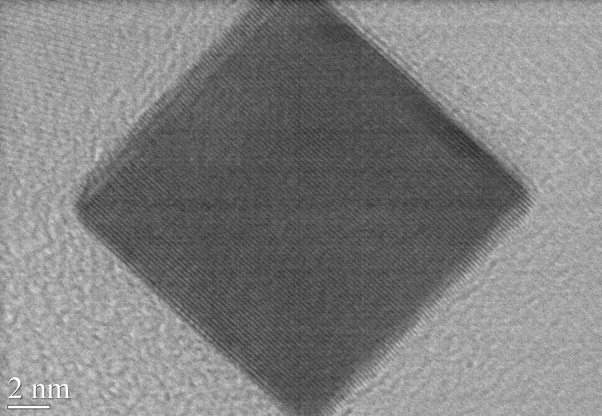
Nanocubes

These electron microscope images show perfect-edged nanocubes produced in a one-step process created at NIST that allows careful control of the cubes size, shape and composition.